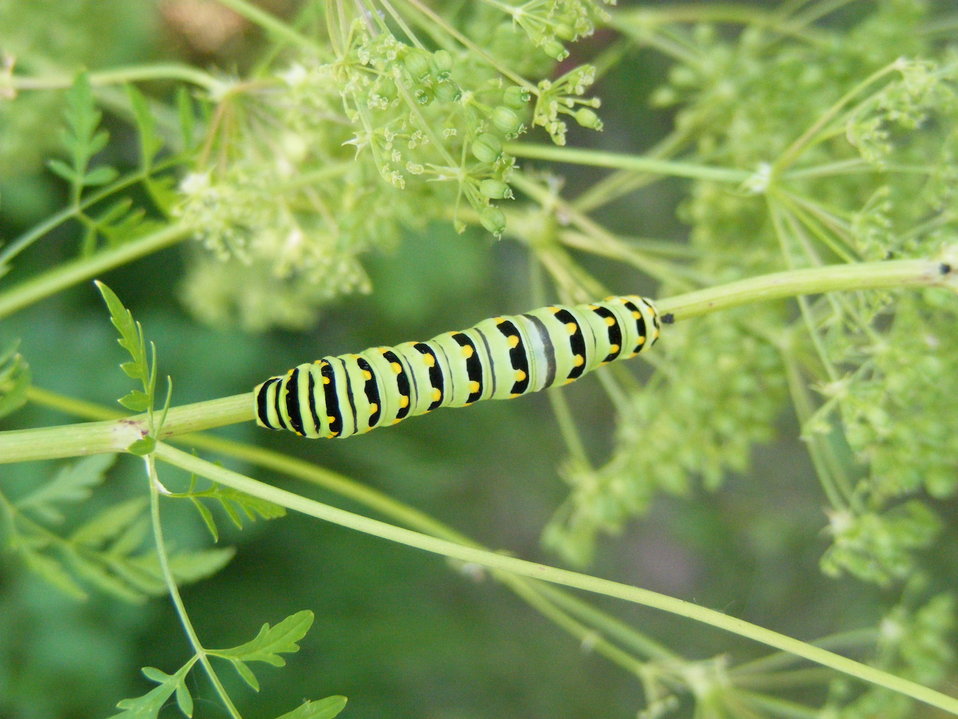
Hiding in Plain Sight

Despite the striking green, yellow and black markings on the black swallowtail caterpillar, it is not that easy to see amongst the green vegetation. Photo was taken on Waubay National Wildlife Refuge near the Visitor Center.